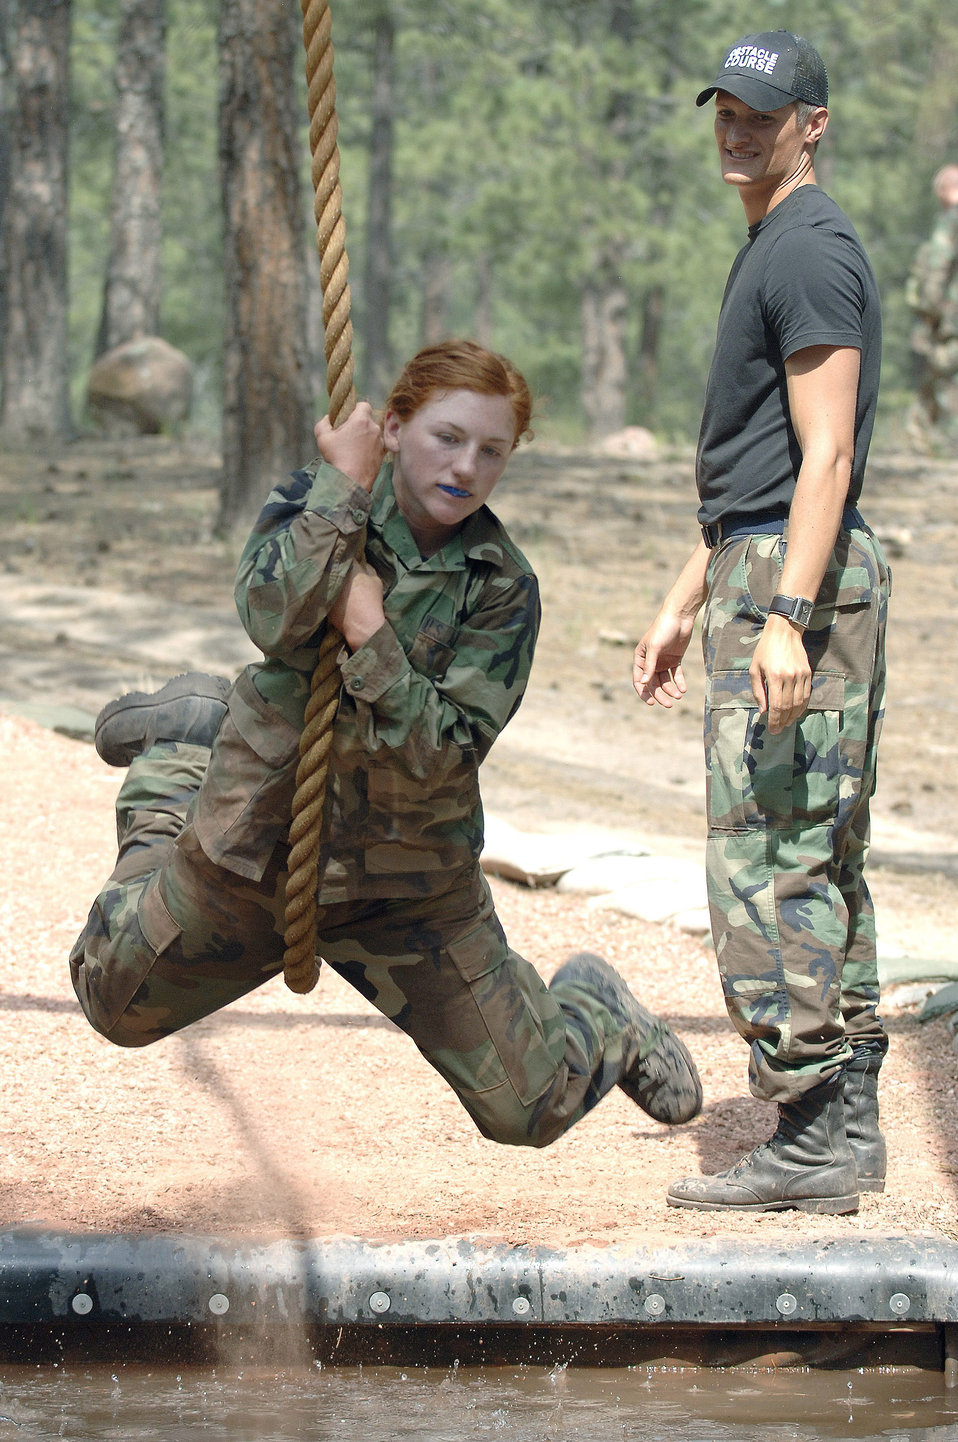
Hanging on

Academy cadet trainee Ashley Hand hangs onto a rope as she swings over a water obstacle on the Jacks Valley obstacle course during the second day of a two-week field training exercise.